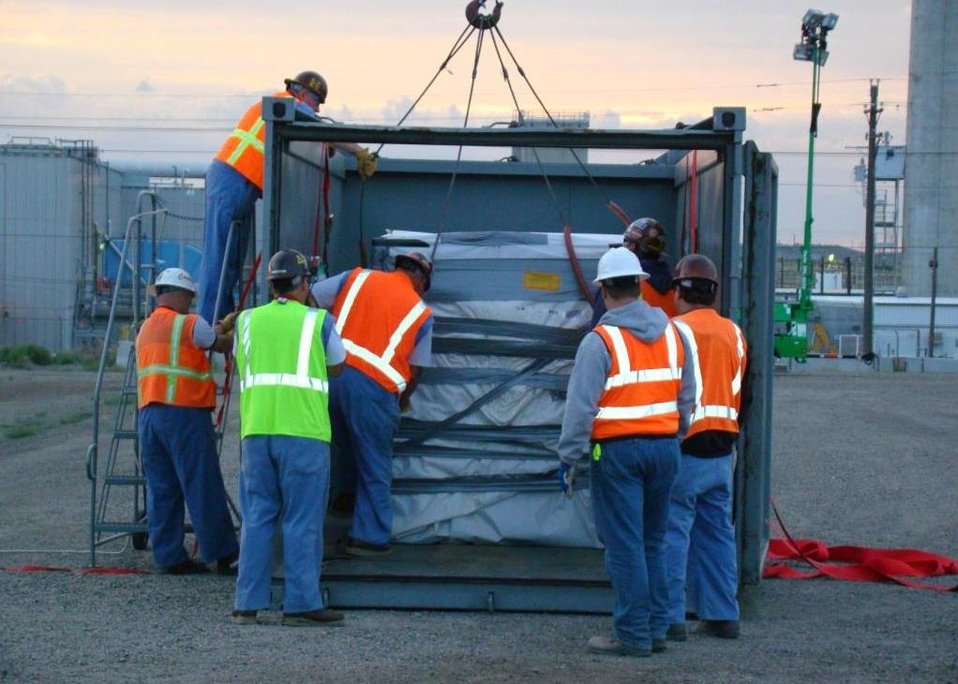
Hanford mixed low-level waste shipment prep

Workers load mixed low-level waste into a shipping container.